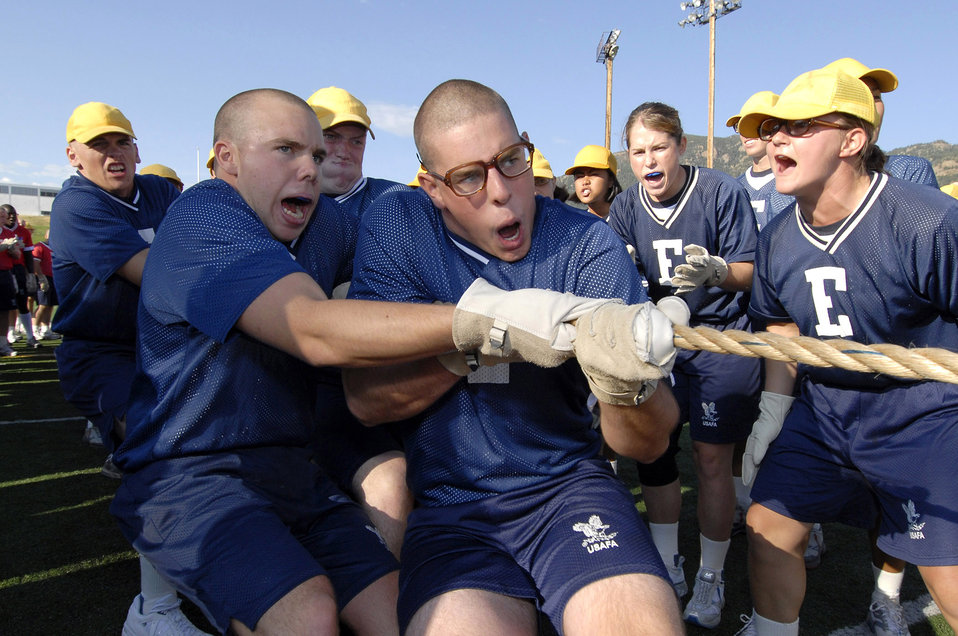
Cadets team up at field day

Basic Cadet Trainee Daniel Whittingham of Nashville, Tenn., leads his team during a tug-of-war contest at Field Day July 14 at the U.S. Air Force Academy in Colorado. New cadets are in their first month of training at the Academy and are learning honor, discipline and integrity in addition to physical fitness.